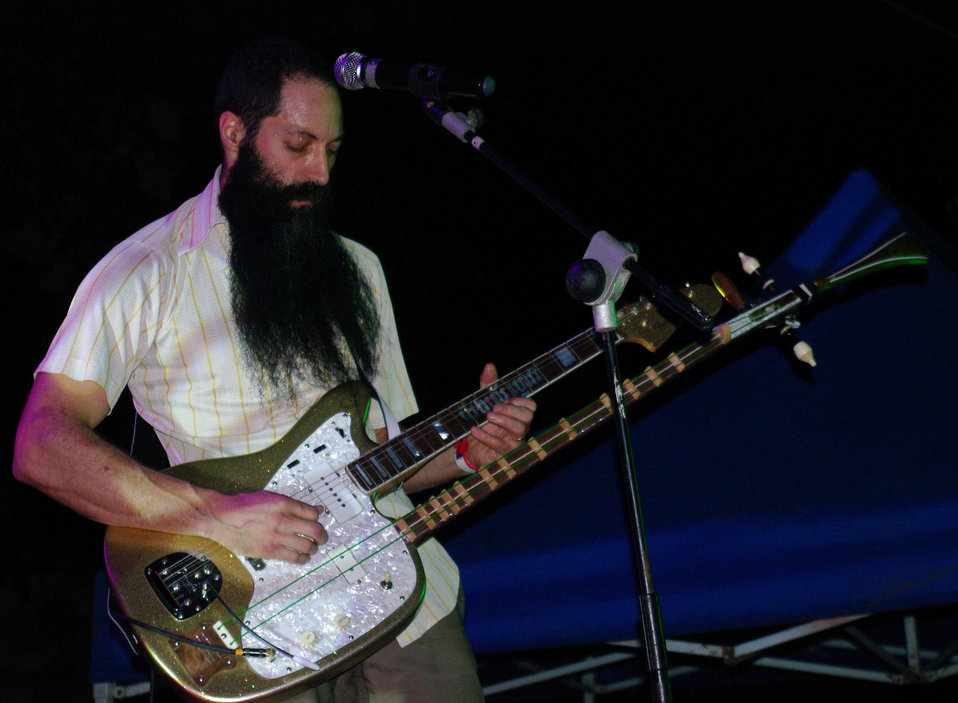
PEPFAR, U.S. Embassy Host Dengue Fever Concert in Hanoi